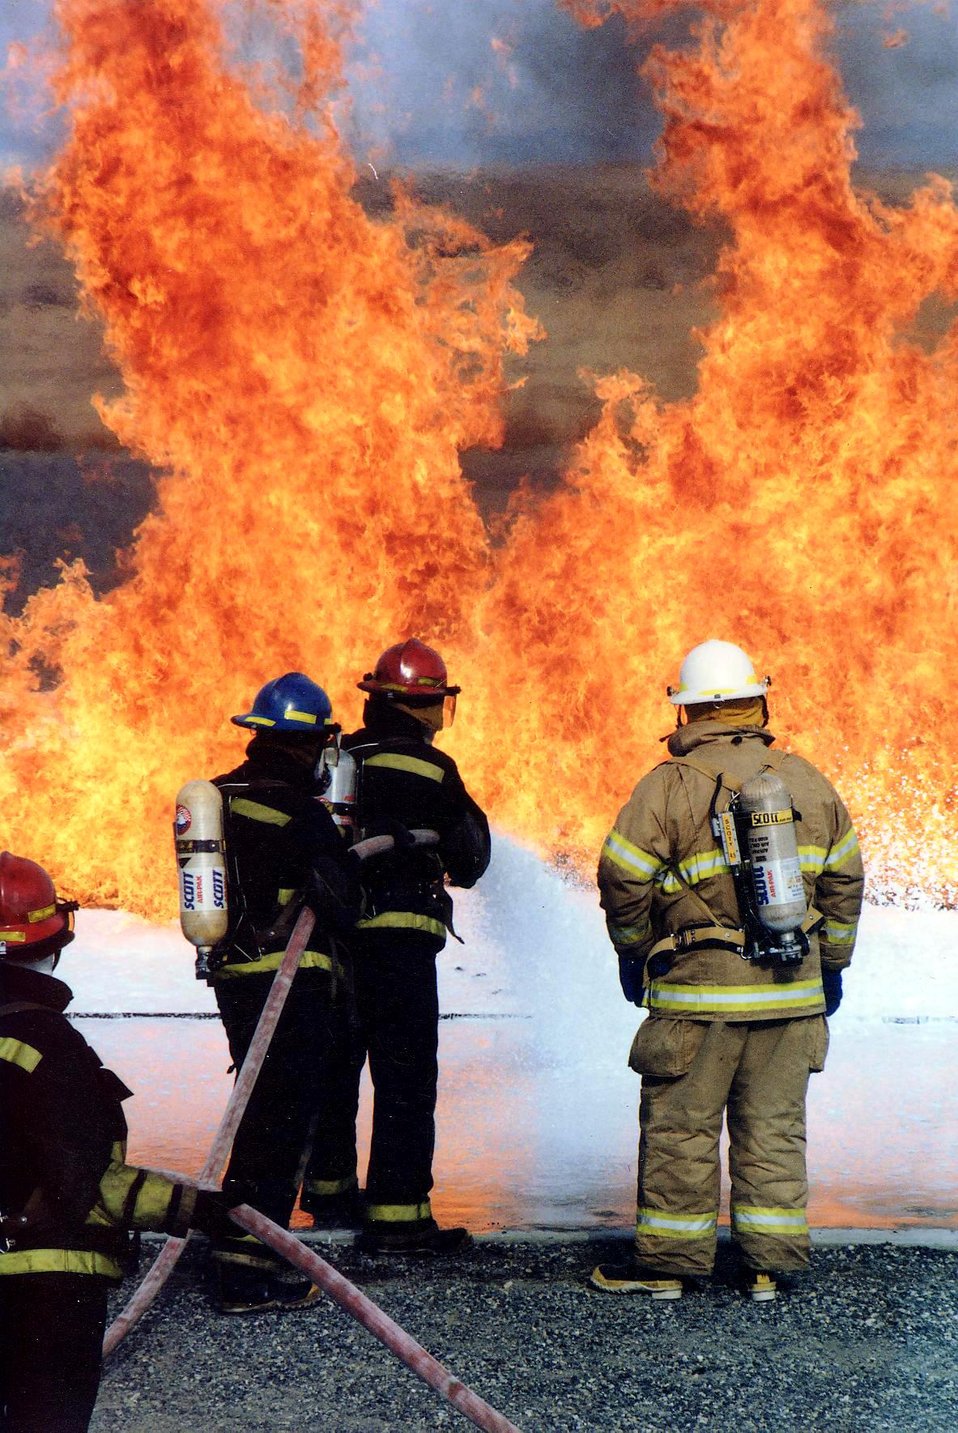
FIREFIGHTERS PRACTICE SPRAYING FOAM AT THE BASE OF A FLAMMABLE LIQUID FIRE AT THE FLAMMABLE LIQUID BURN PAD.

THE HAZARDOUS MATERIALS MANAGEMENT AND EMERGENCY RESPONSE CENTER (HAMMER), IS A TRAINING FACILITY LOCATED IN RICHLAND, WASHINGTON. HAMMER AREAS OF EXPERTISE INCLUDE EMERGENCY OPERATIONS, ENVIRONMENTAL AND WASTE MANAGEMENT AND RECOVERY, FIRE OPERATIONS, LAW ENFORCEMENT, NUCLEAR SAFETY, OCCUPATIONAL SAFETY AND HEALTH AND TRANSPORTATION. HAMMER PLAYS AN IMPORTANT ROLE IN HOMELAND SECURITY TRAINING.